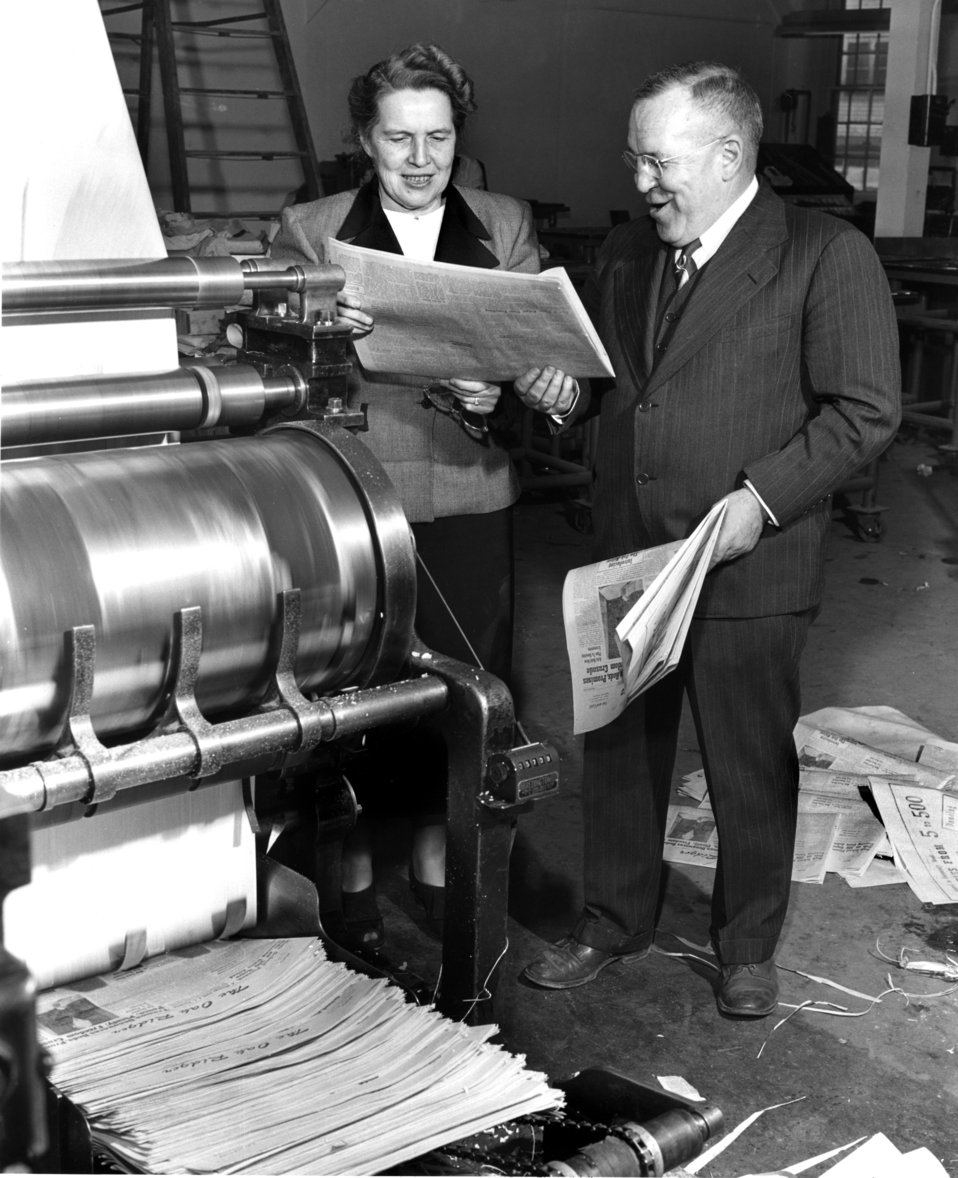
First Run of Oak Ridger Newspaper

5354-1 DOE photo Ed Westcott 1-20-1949 Oak Ridge Tennessee